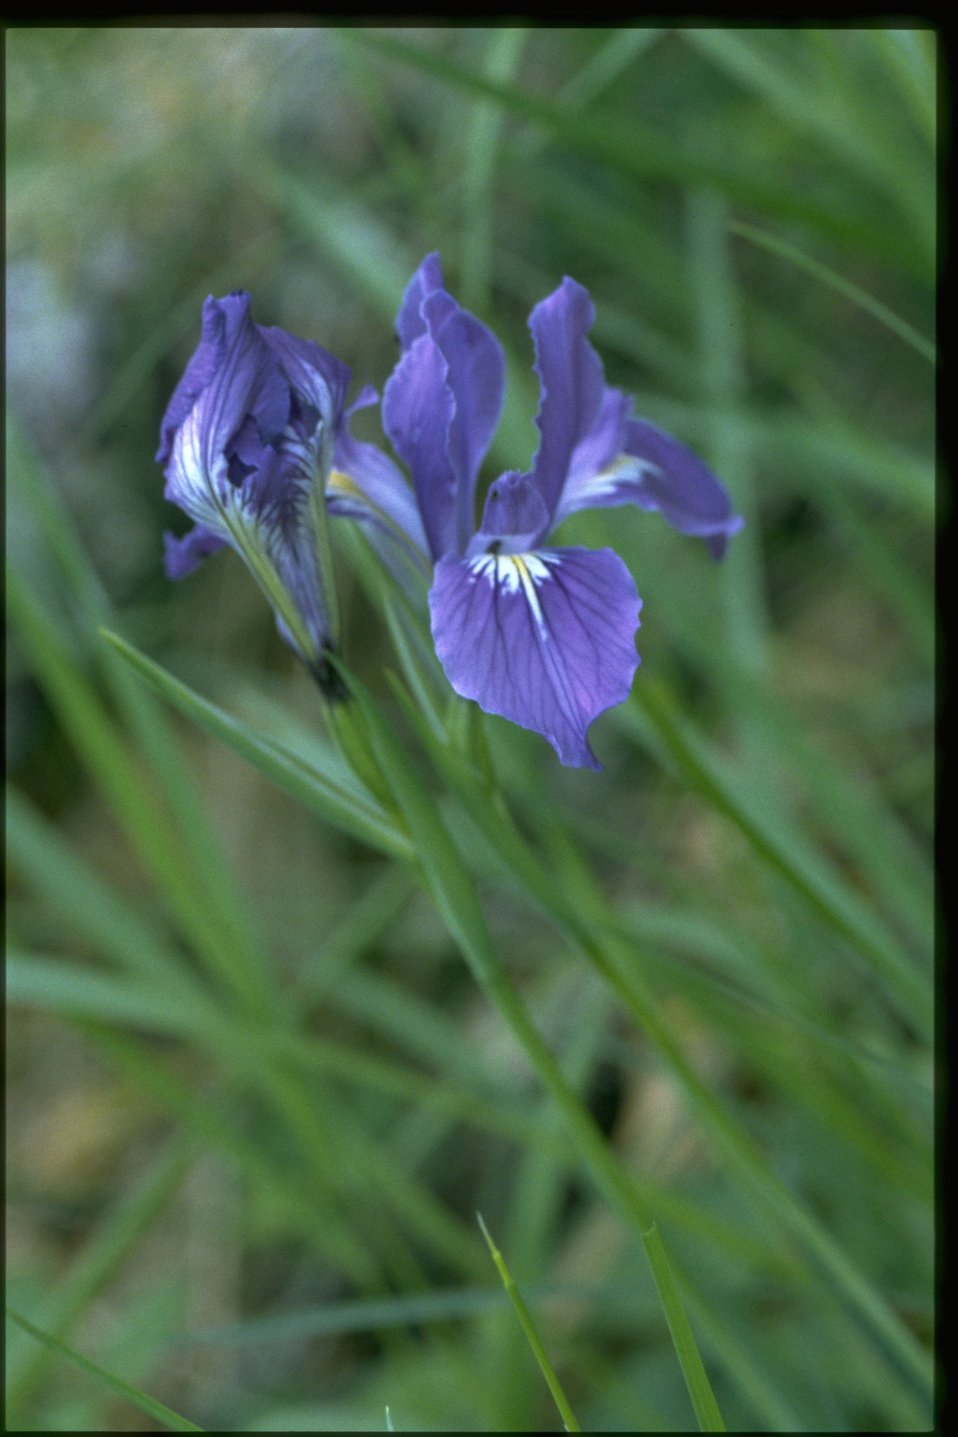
Medium shot of Iris tenax.